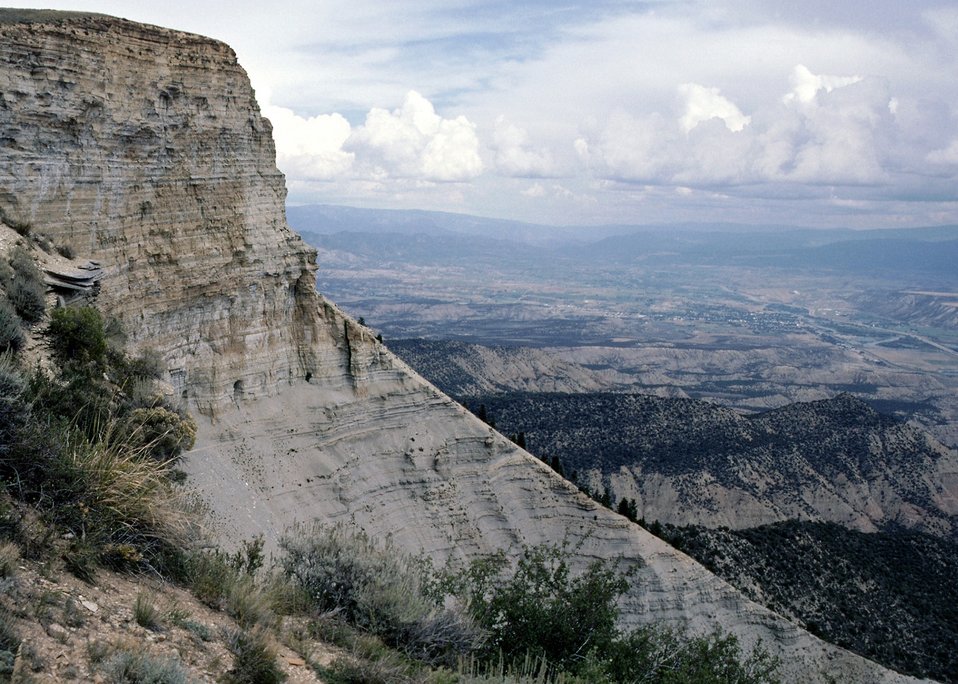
Veiw from Anvil Point Road